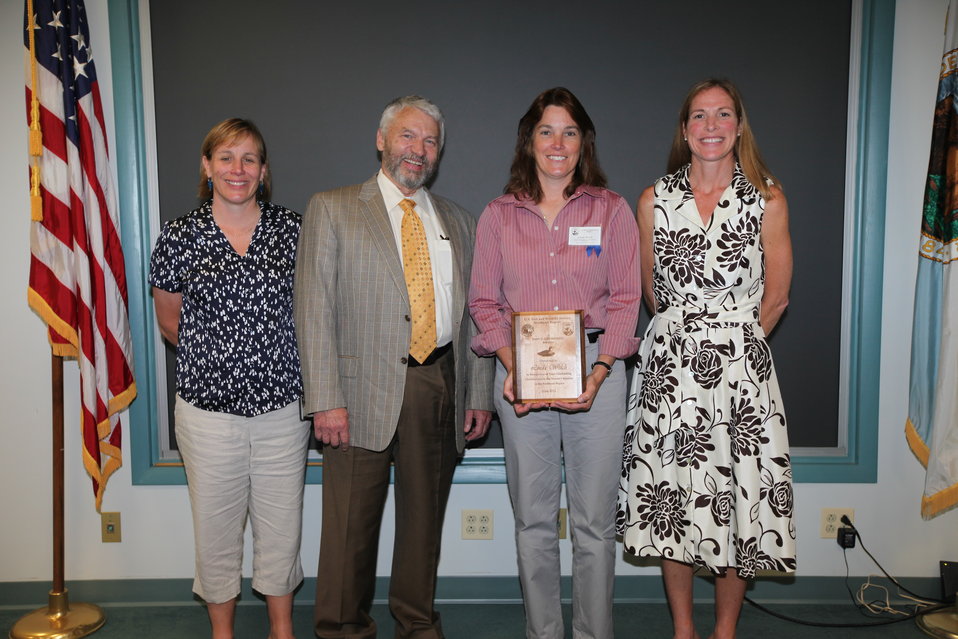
Linda Welch, Maine Coastal Islands National Wildlife Refuge, was recognized with the John S. Gottschalk Partnership Award.
From left to right: Deputy Regional Director Deb Rocque, Deputy Director Rowan Gould, Linda Welch, and Regional Director Wendi Weber